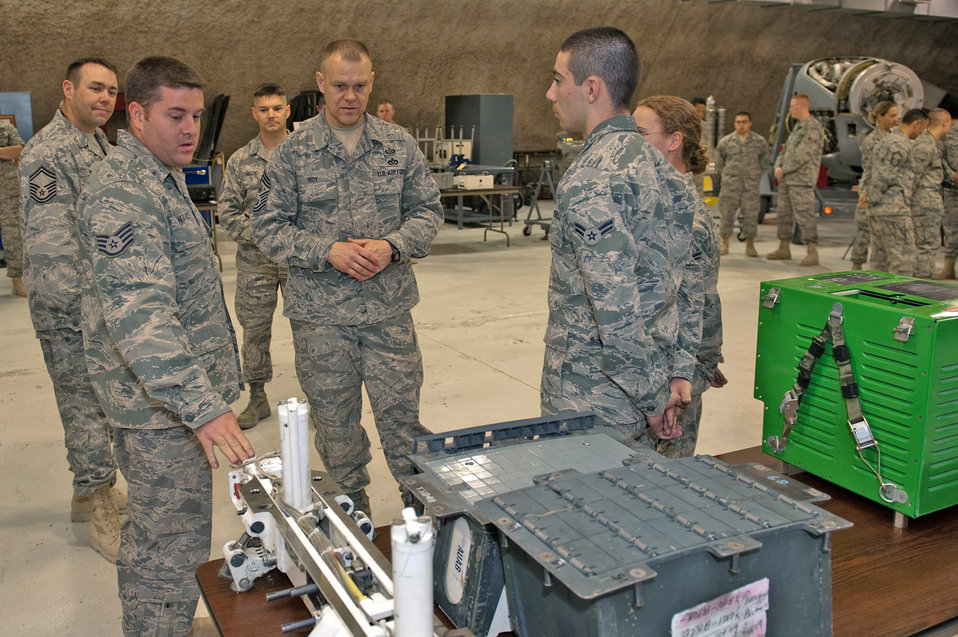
CMSAF Visits Southwest Asia

Chief Master Sgt. of the Air Force James A. Roy receives a briefing from Staff Sgt. James Heatherly about his role in maintaining aircraft weapons systems, Nov. 30, 2009. Chief Roy is touring the U.S. Air Forces Central Command area of responsibility, visiting with Airmen and addressing numerous issues affecting servicemembers who are deployed in support of operations Iraqi Freedom and Enduring Freedom.